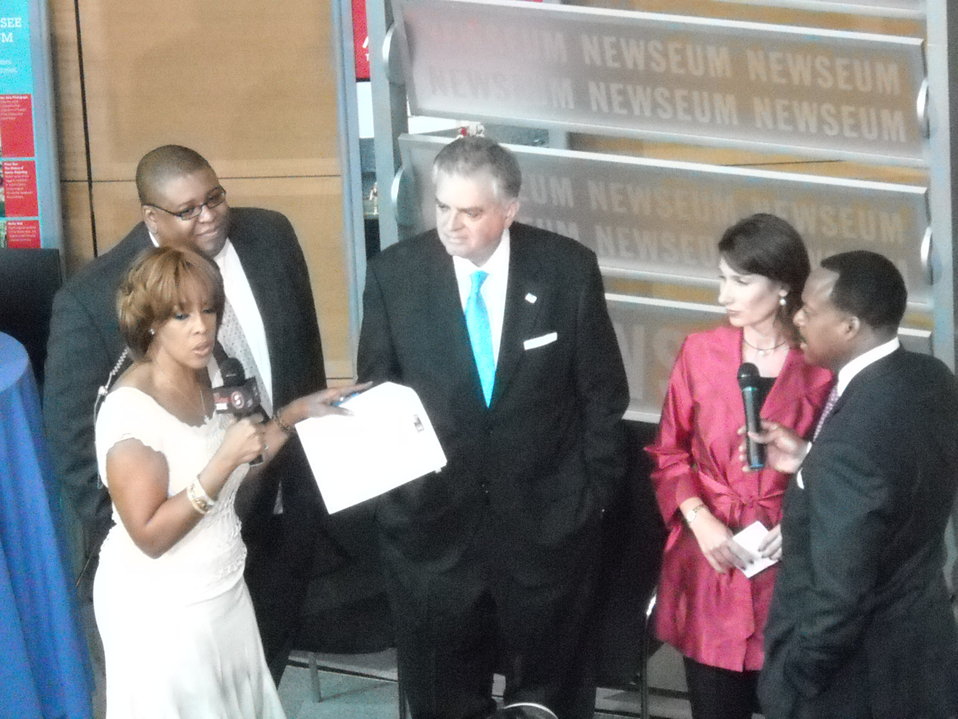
National No Phone Zone Day Newsum Washington, DC April 30, 2010 051